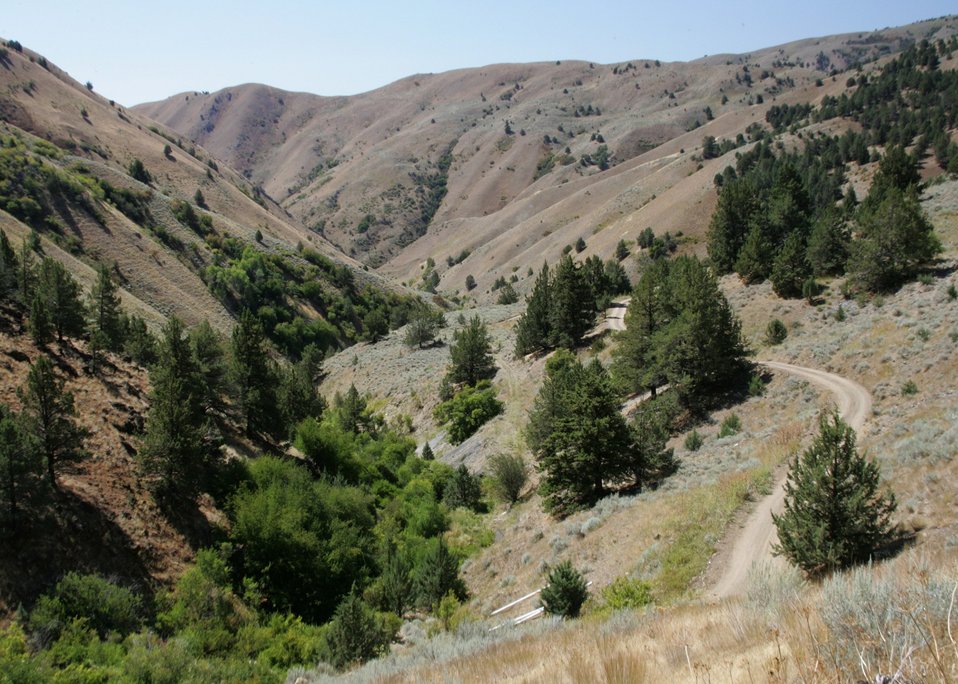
Connor Creek watershed, a tributary to the Snake River. Gold was discovered on Connor Creek in 1871 by James Eidleman and Mr. Wood.